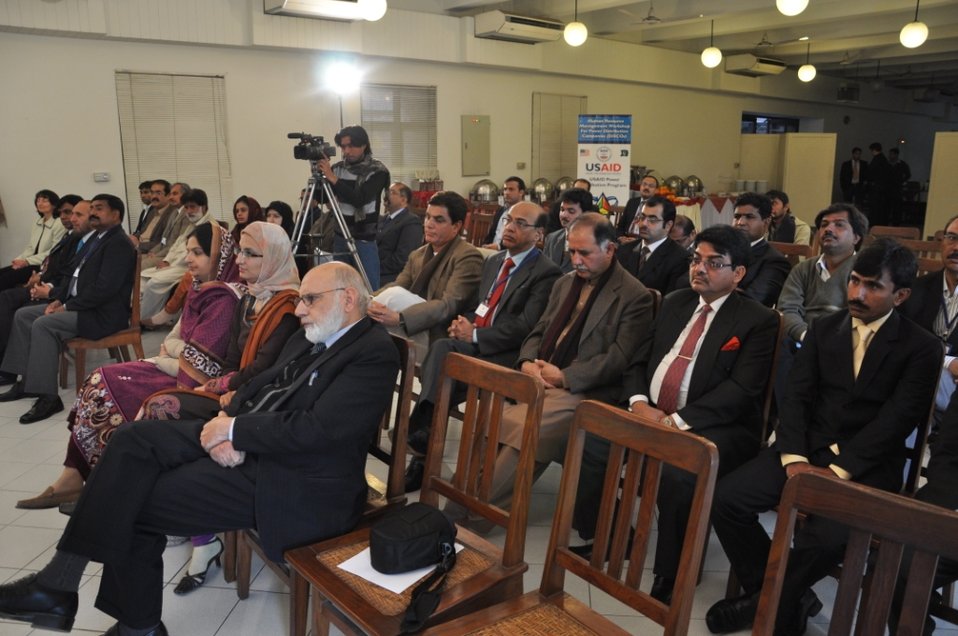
HR Workshop at LUMS

Lahore, January 15, 2012 - Human Resource workshop received participation from all 9 power distribution companies.